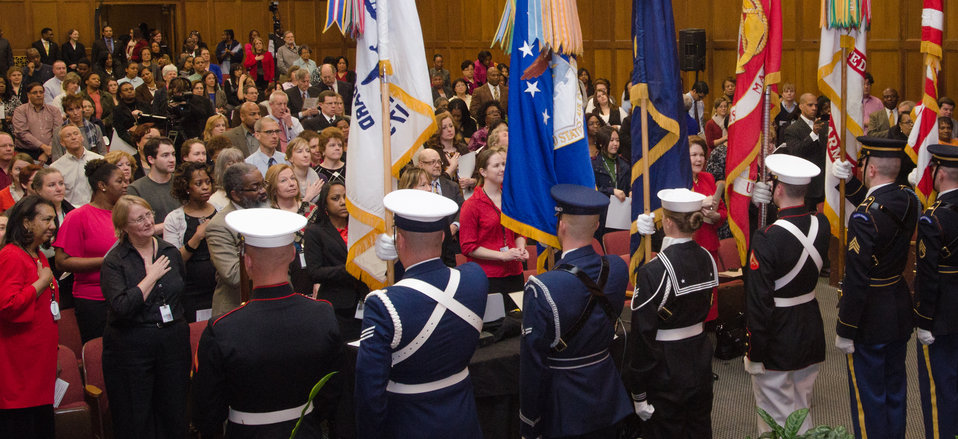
The U.S. Military District of Washington Joint Armed Forces Color of Guard provides the Presentation of Colors at the 2013 Women’s History Month Observance in the Jefferson Auditorium, during the “Women Inspiring Innovation Through Imagination: Celebrating Women in Science, Technology, Engineering, and Mathematics” event, on Thursday, March 21, 2013, in Washington, D.C. Some people audience notices that the Navy Color Guard is female.